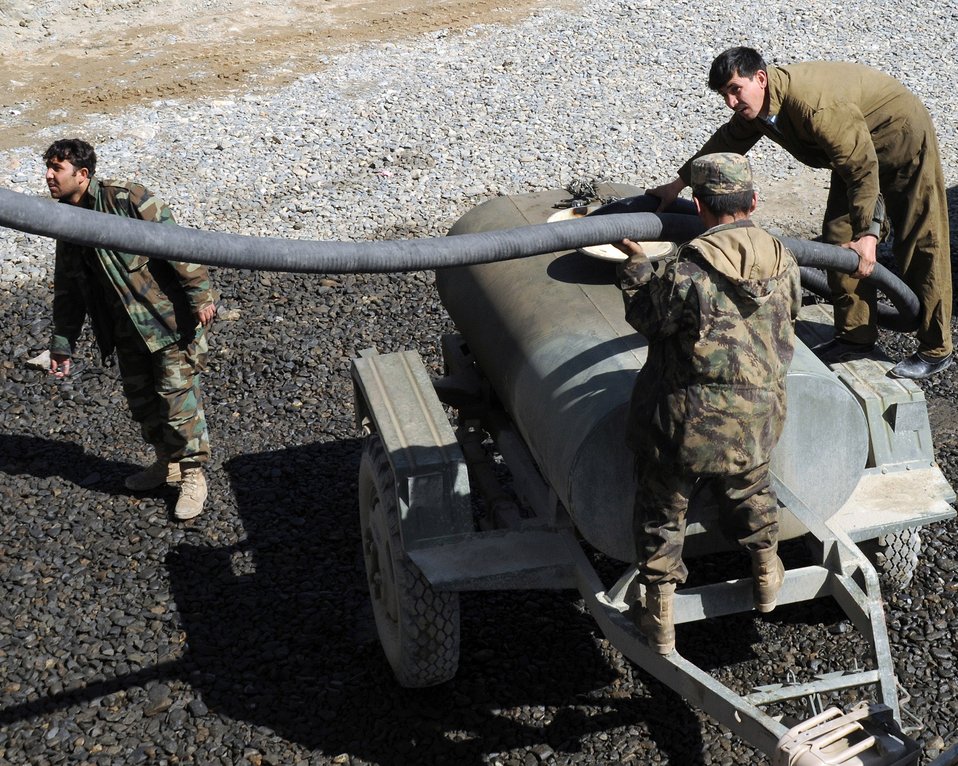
Airmen mentor Afghan national army

Afghan national army soldiers pump fuel at the Class 3 depot Feb. 23 in Kabul, Afghanistan. The depot distributes gasoline, diesel fuel and fire wood to ANA and Afghan national police from throughout the country. The ANA are mentored by American Airmen.